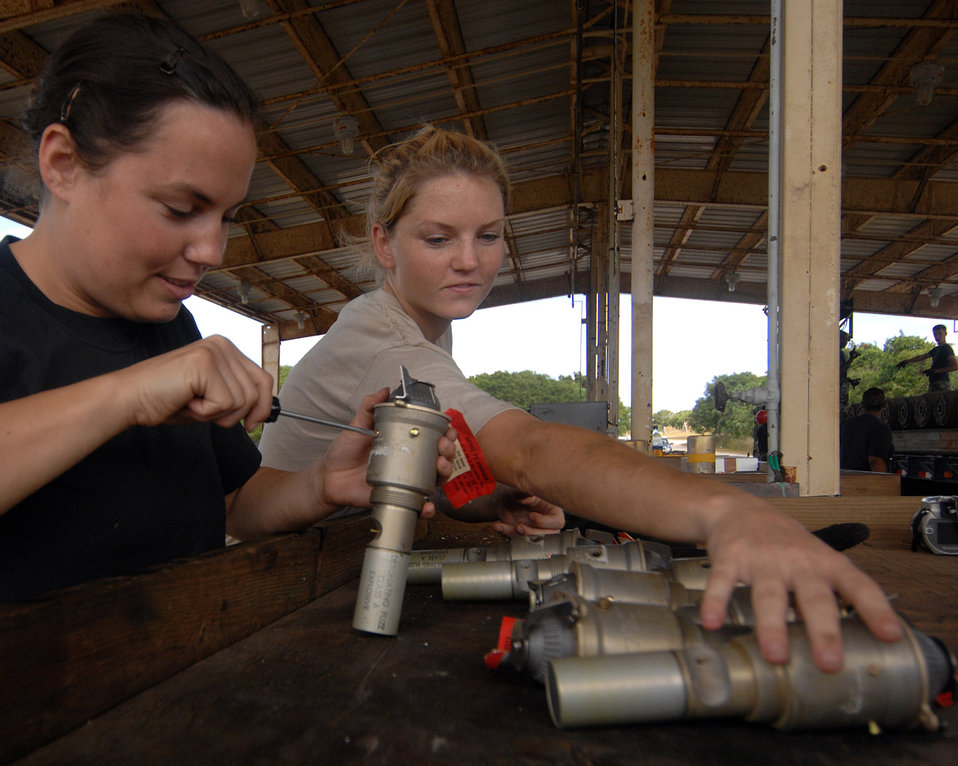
Munitions loaders arm B-52s

Senior Airman Julia Unsworth and Airman First Class Casey Carrano inspect nose fuzes before inserting them into bombs. Airmen in the 36th Munitions Squadron at Andersen Air Force Base, Guam, are assembling free-fall, unguided, general purpose 750-pound bombs that will eventually be loaded on a B-52 Stratofortress. In a conventional conflict, the B-52 can carry nuclear or precision-guided conventional ordnance with worldwide precision navigation capability. capability. Airman Unsworth is deployed from the 2nd Maintenance Group from Barksdale AFB, La., and Airman Carrano is with the 36th MS at Andersen AFB.